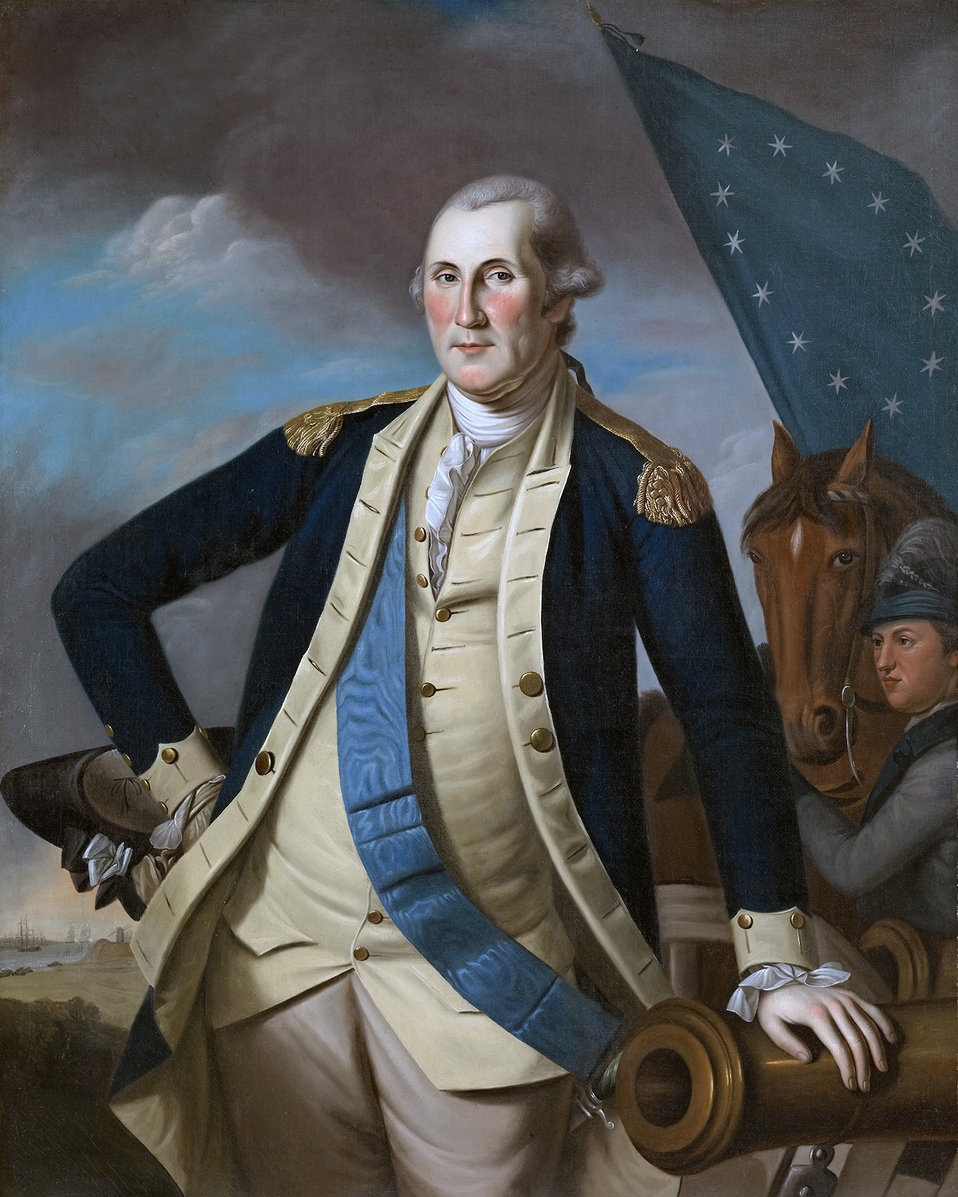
'George Washington' 1780-82 by Charles Willson Peale. Crystal Bridges Museum of American Art